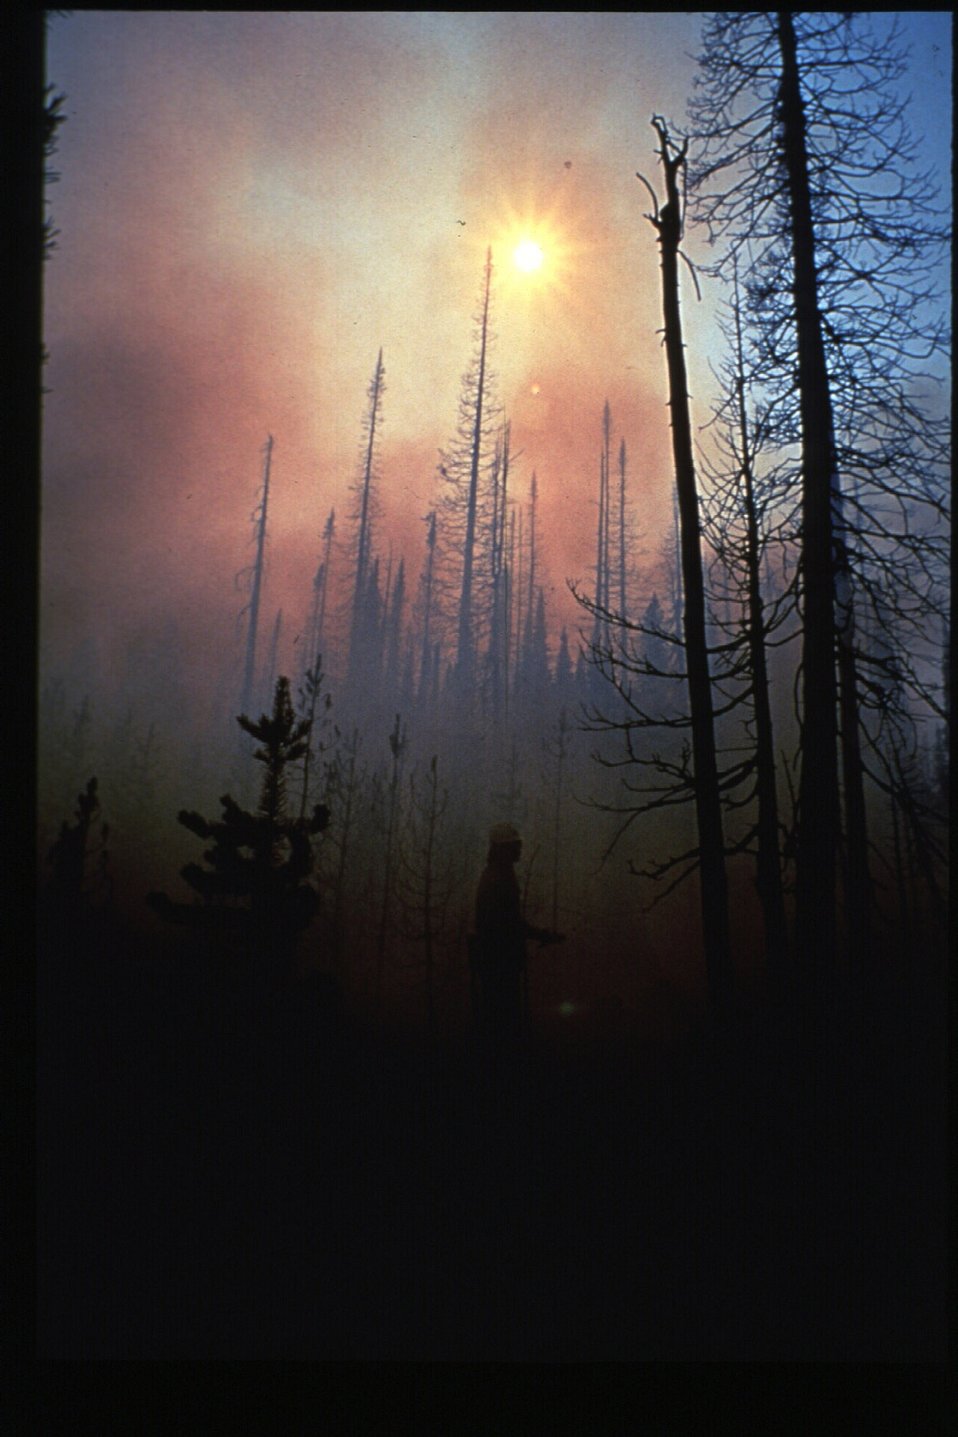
Boise Foothills Fire Danskin Mountains and South Fork of Boise River Wild Fire Fighter Smoke Four River Field Office LSRD Lower Snake River District